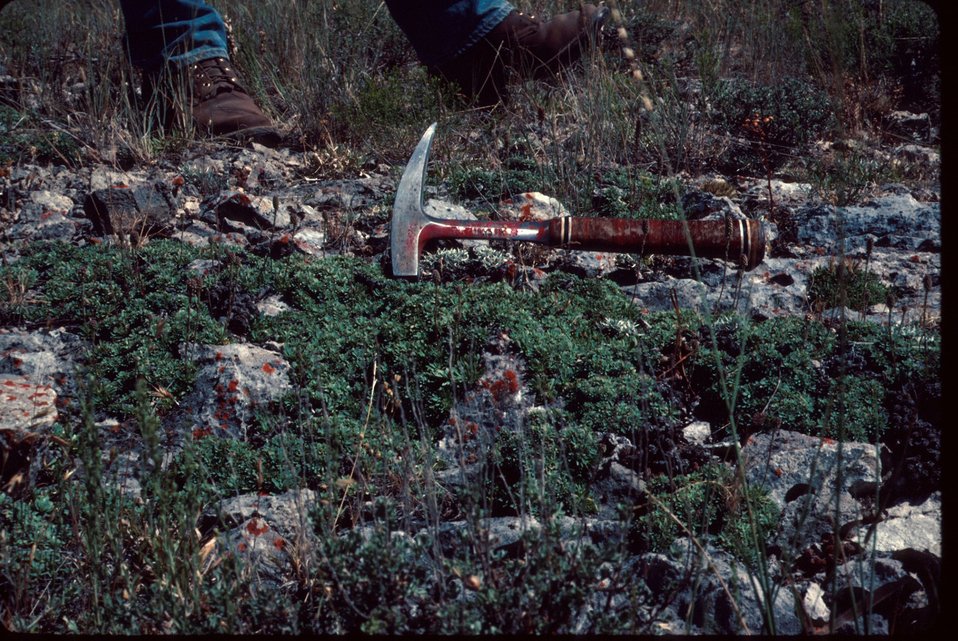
Astragalus spatulatus Milkvetch Wildflower